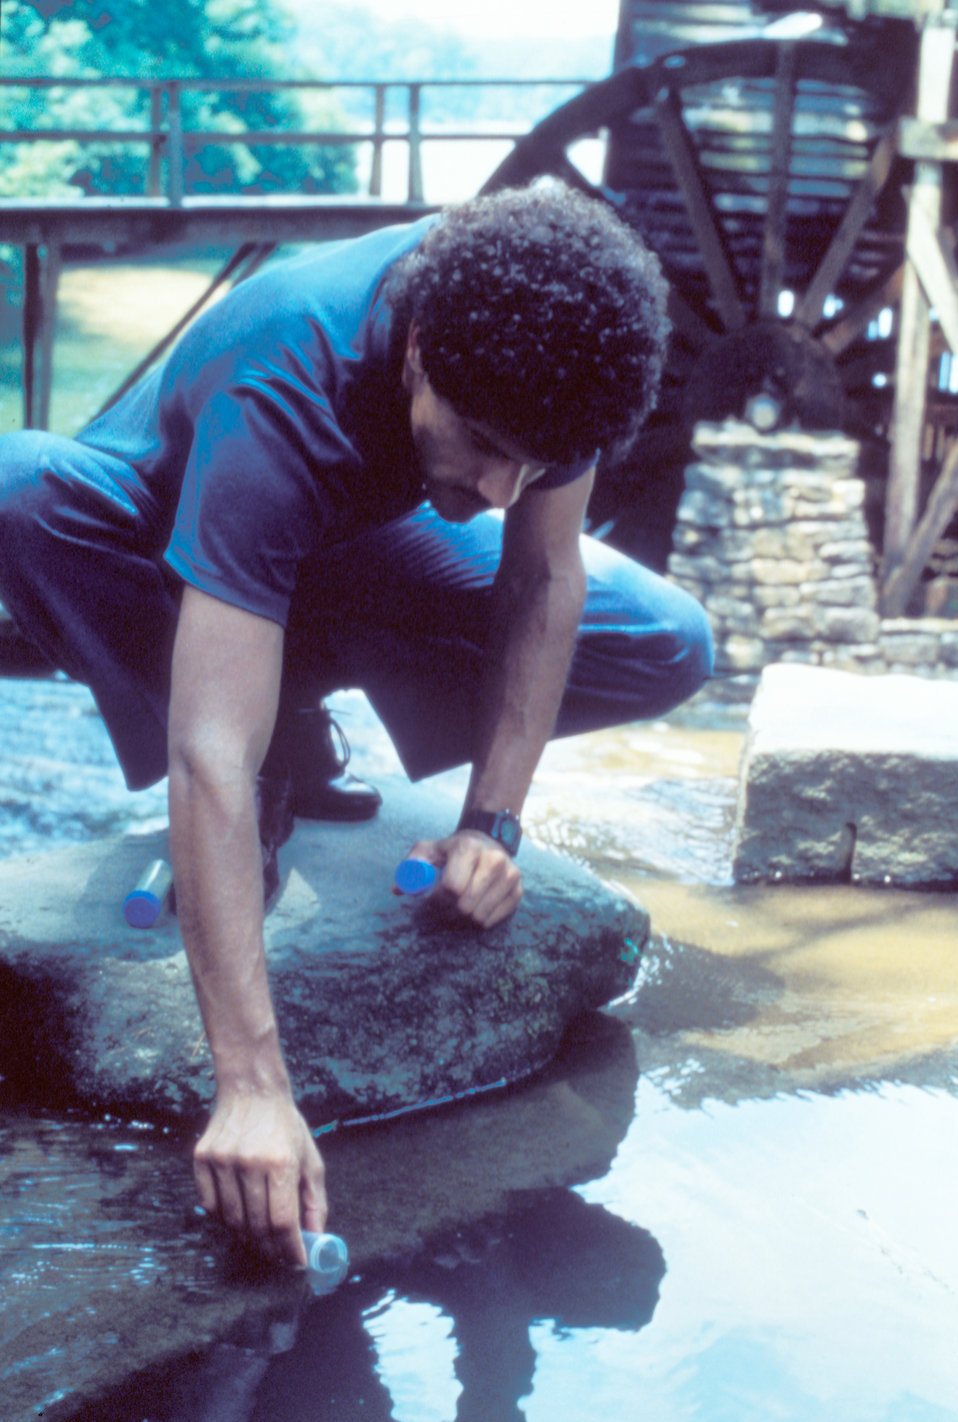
This CDC EIS officer is collecting water samples in a vial for later laboratory analysis.